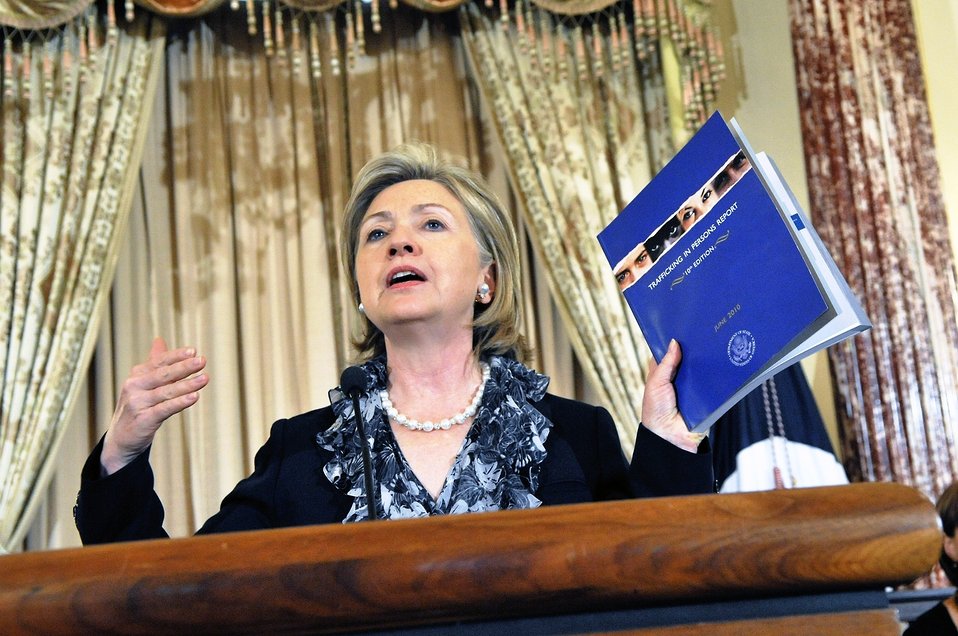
Secretary Clinton Announces Release of 2010 Trafficking in Persons Report

U.S. Secretary of State Hillary Rodham Clinton announces the release of the 2010 Trafficking in Persons Report at the U.S. Department of State in Washington, D.C., on June 14, 2010.